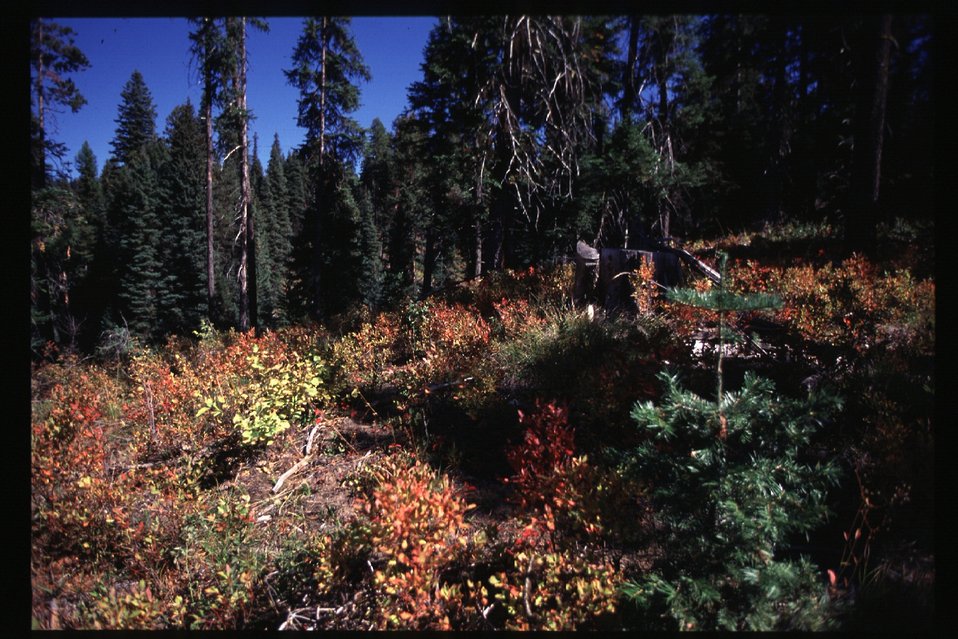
Scenic Mineral Ridge Trail Couer d'Alene Field Office UCSC Upper Columbia Salmon Clearwater District